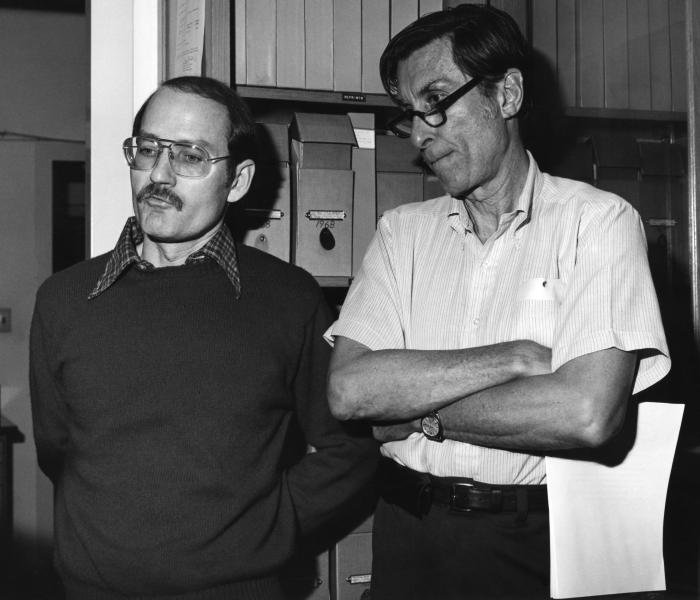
This photograph, taken around the time of the Legionnaires' outbreak of 1976, showed Centers for Disease Control's Joseph E. McDade, Ph.D., (Lt) and Charles C. Shepard, M.D.